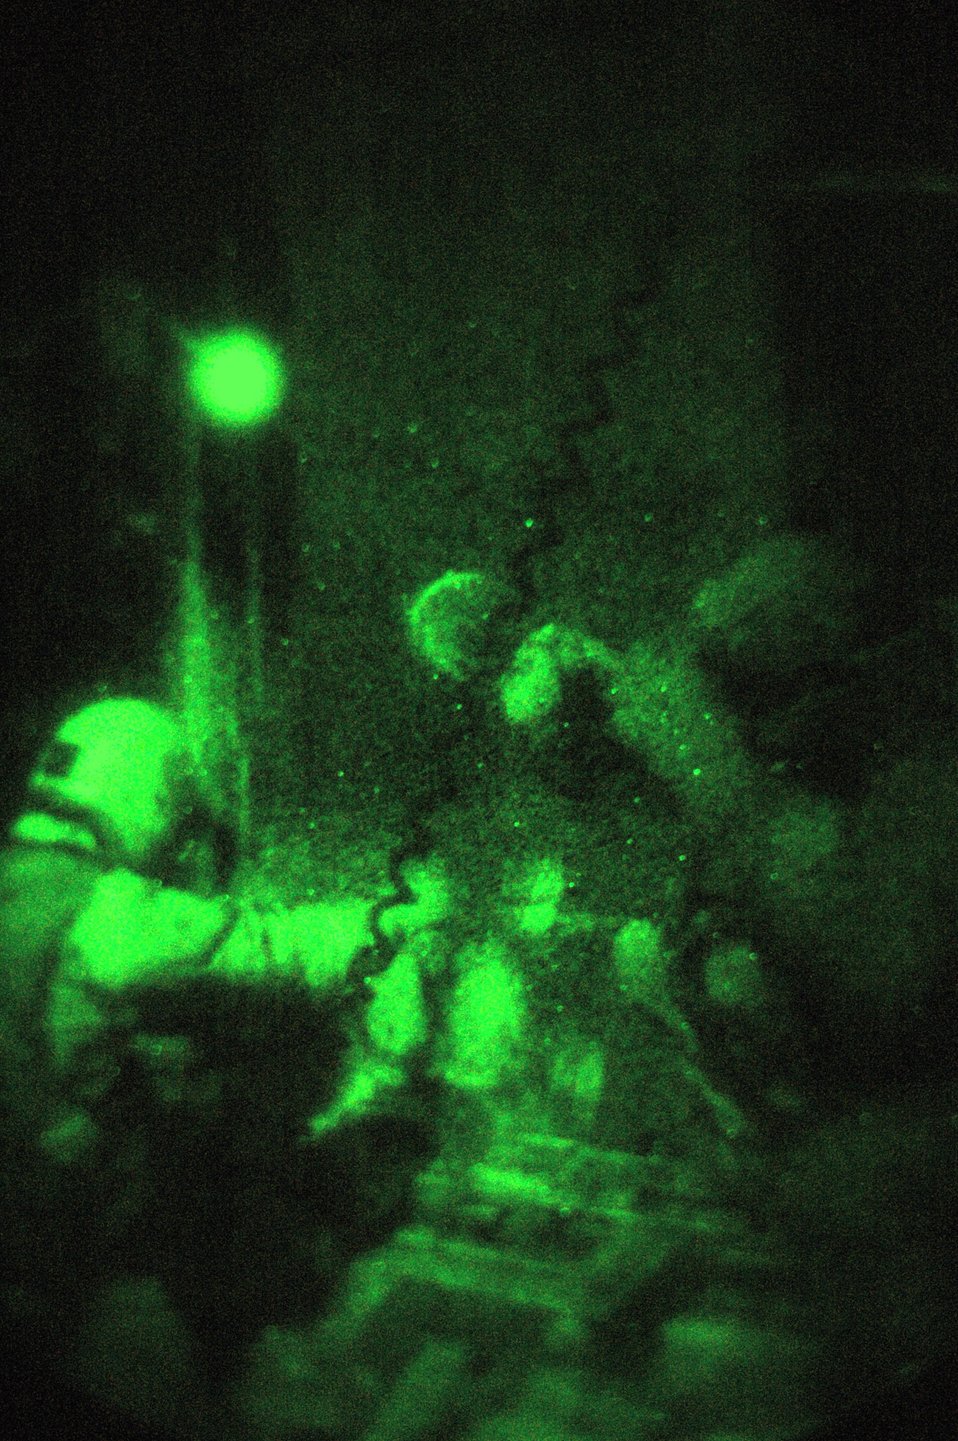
Airmen perform leaflet drop over Afghanistan

Airman 1st Class Jacob Medina (left) and Senior Airman William Moody throw boxes containing leaflets from a C-130 Hercules during a nighttime airdrop misison in October over Afghanistan. Airmen Medina and Moody are 40th Expeditionary Airlift Squadron loadmasters. The mission for the 40th EAS crew was to drop 300,000 leaflets over Afghanistan to give the local population a general warning to avoid the enemy.